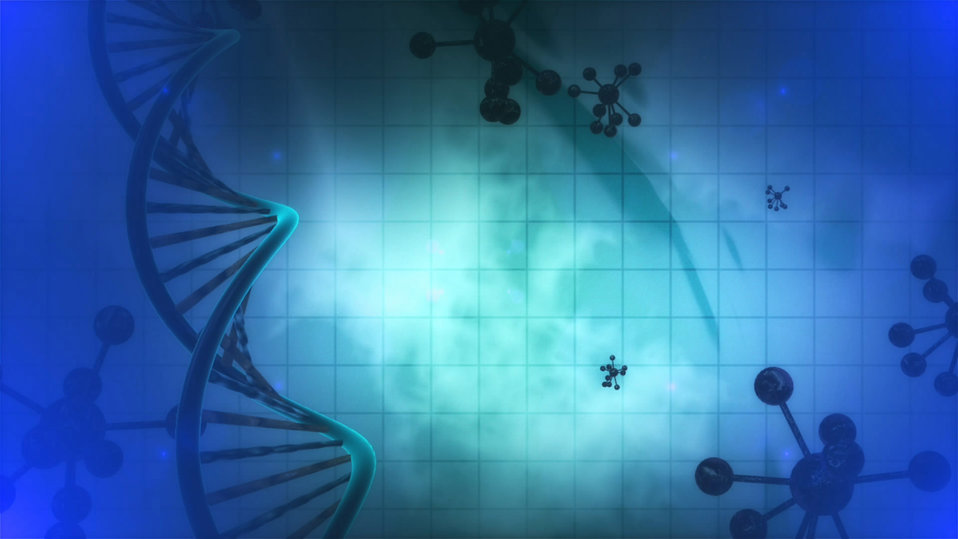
Microbiology

Background on the subject of microbiology.